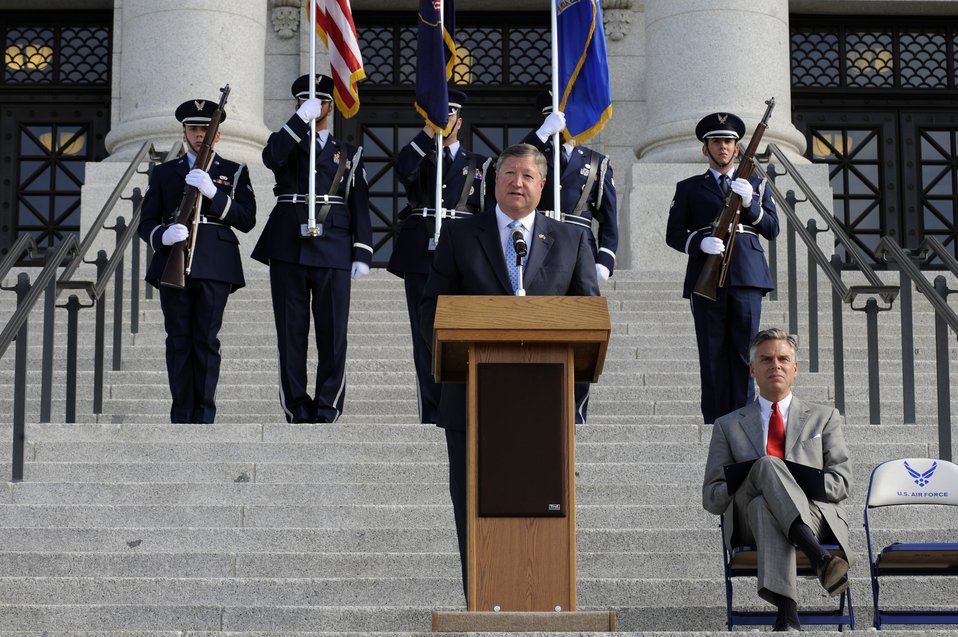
Air Force Week - Salt Lake City kicks off

Air Force Secretary Michael B. Donley speaks during the proclamation ceremony for Air Force Week Salt Lake City June 1 at the Utah state capitol building. The ceremony included performances by the Air Force Academy Band, U.S. Air Force Honor Guard and a fly-over by four F-16 Fighting Falcons. Air Force Week Salt Lake City is June 1-7, with events throughout the area.